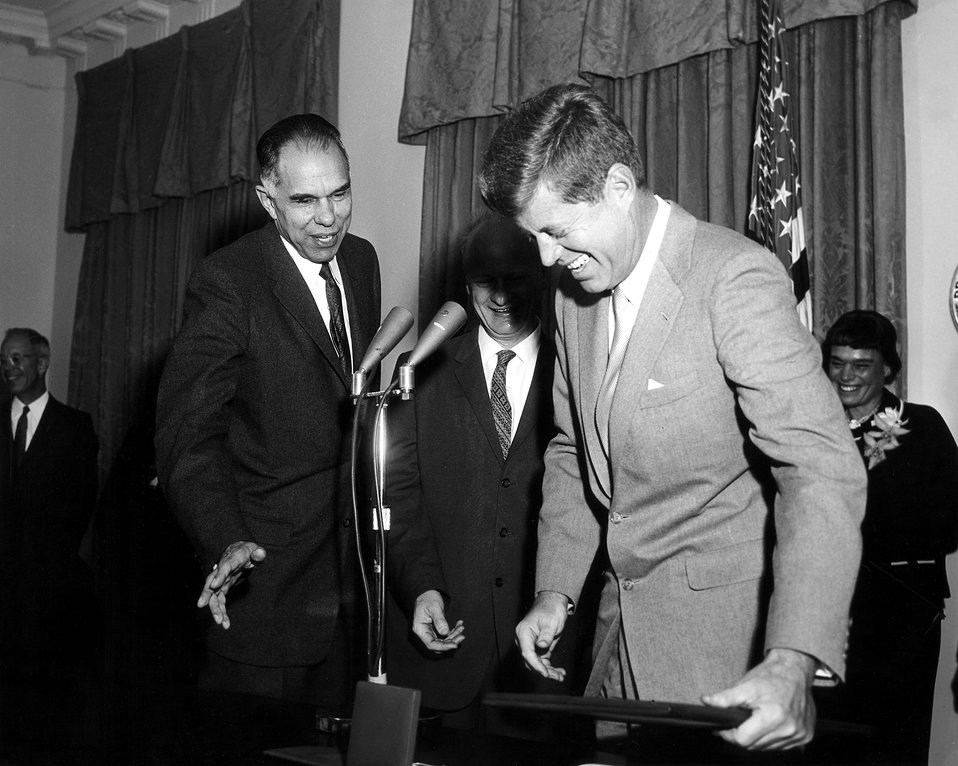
Hans Bethe receiving the Fermi Award in 1961.